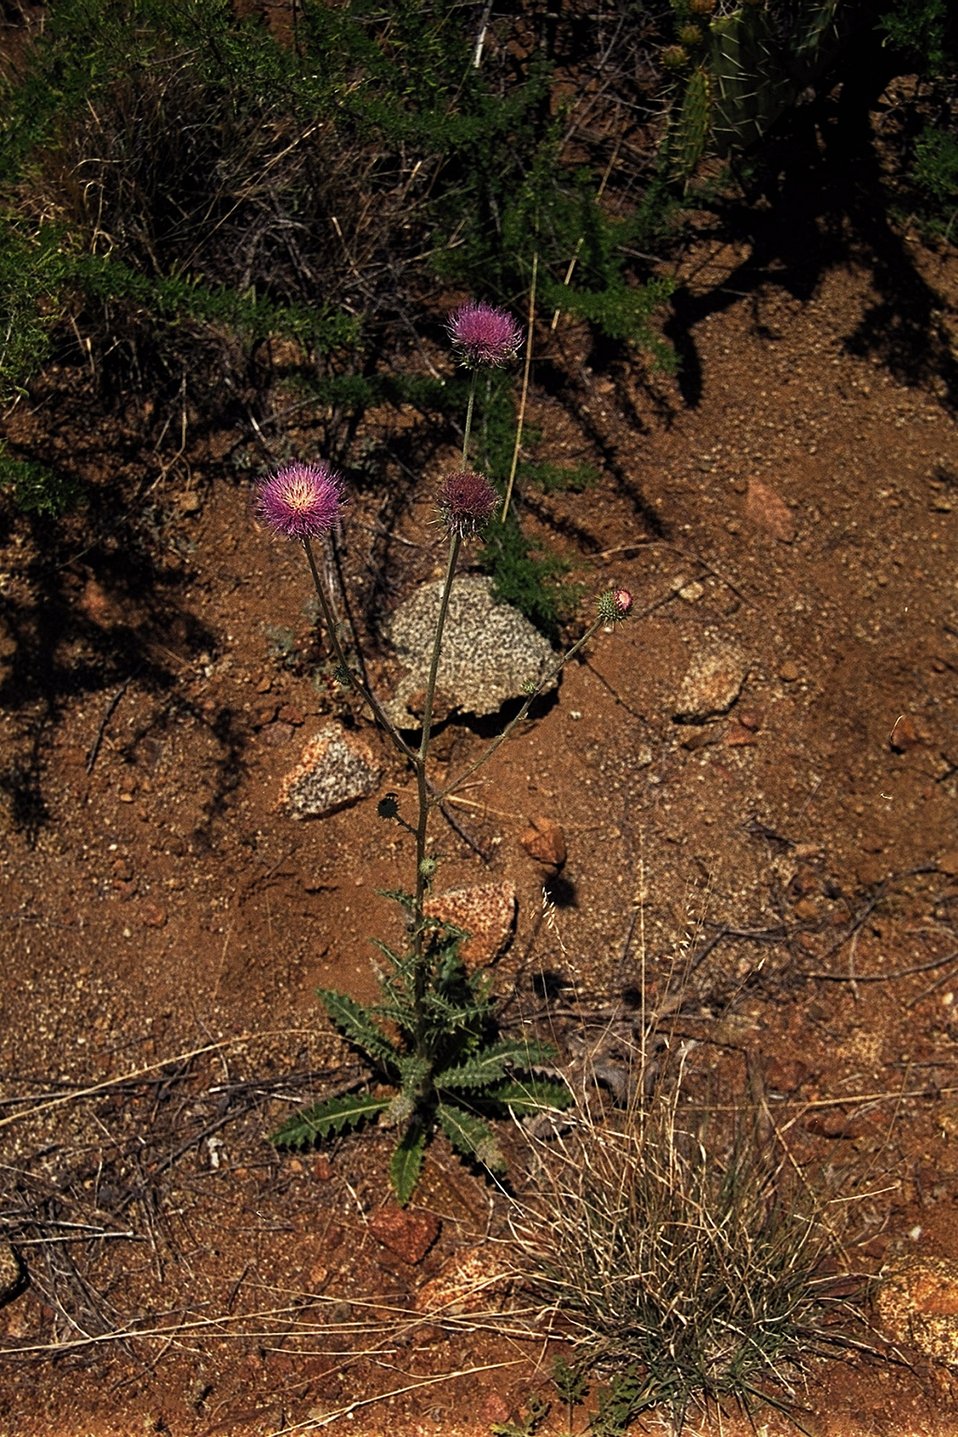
Little Arizona weeds with purple flowers.